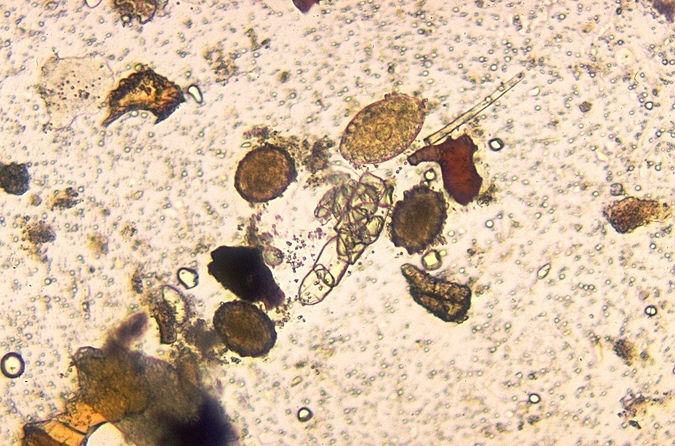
Echinostoma and Ascaris eggs for size comparison. Unstained mount of formalin-preserved feces. Parasite.